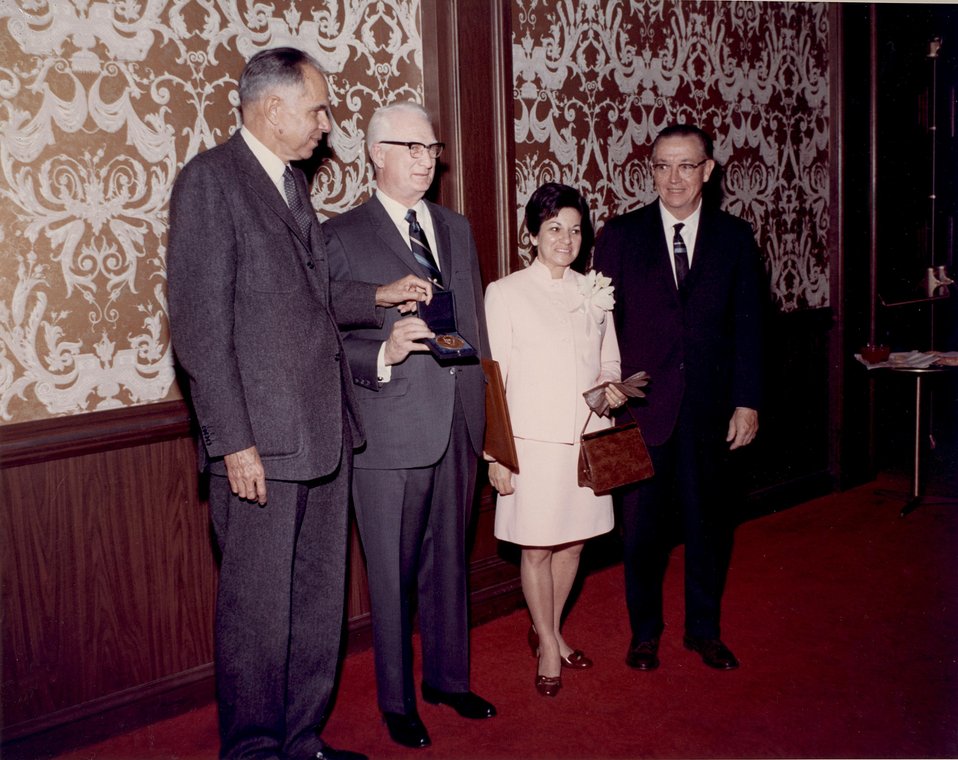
Fermi Award. Recipient: Walter Zinn. Date: Dec 2, 1970.